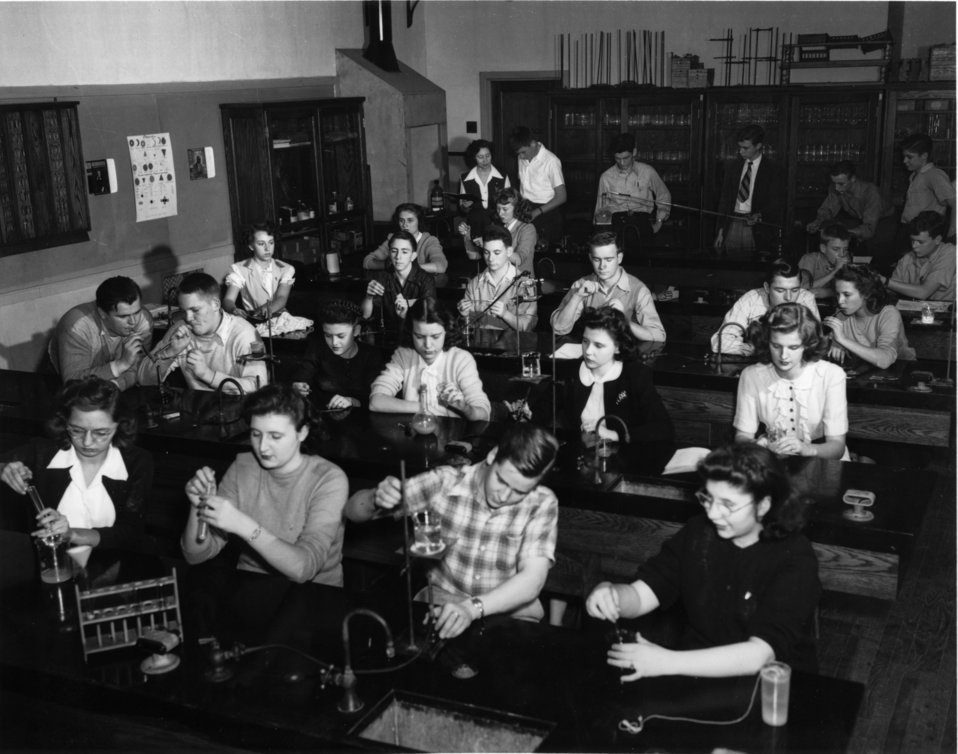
Schools at Oak Ridge